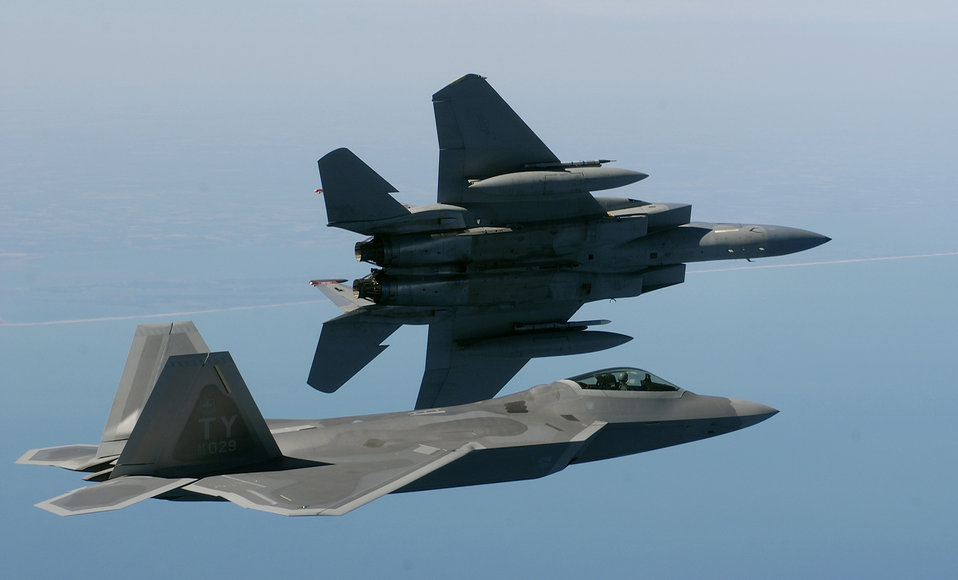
Birds of a feather ...

OVER THE ATLANTIC OCEAN -- An F-15 Eagle banks left while an F/A-22 Raptor flies in formation en route to a training area off the coastline of Virginia on April 5. The 27th Fighter Squadron is performing regular operations with two Raptors on loan from Tyndall Air Force Base, Fla. The first Langley AFB, Va., F-22 is due to arrive within the next month. The F-15 is assigned to the 1st Fighter Wing at Langley AFB.